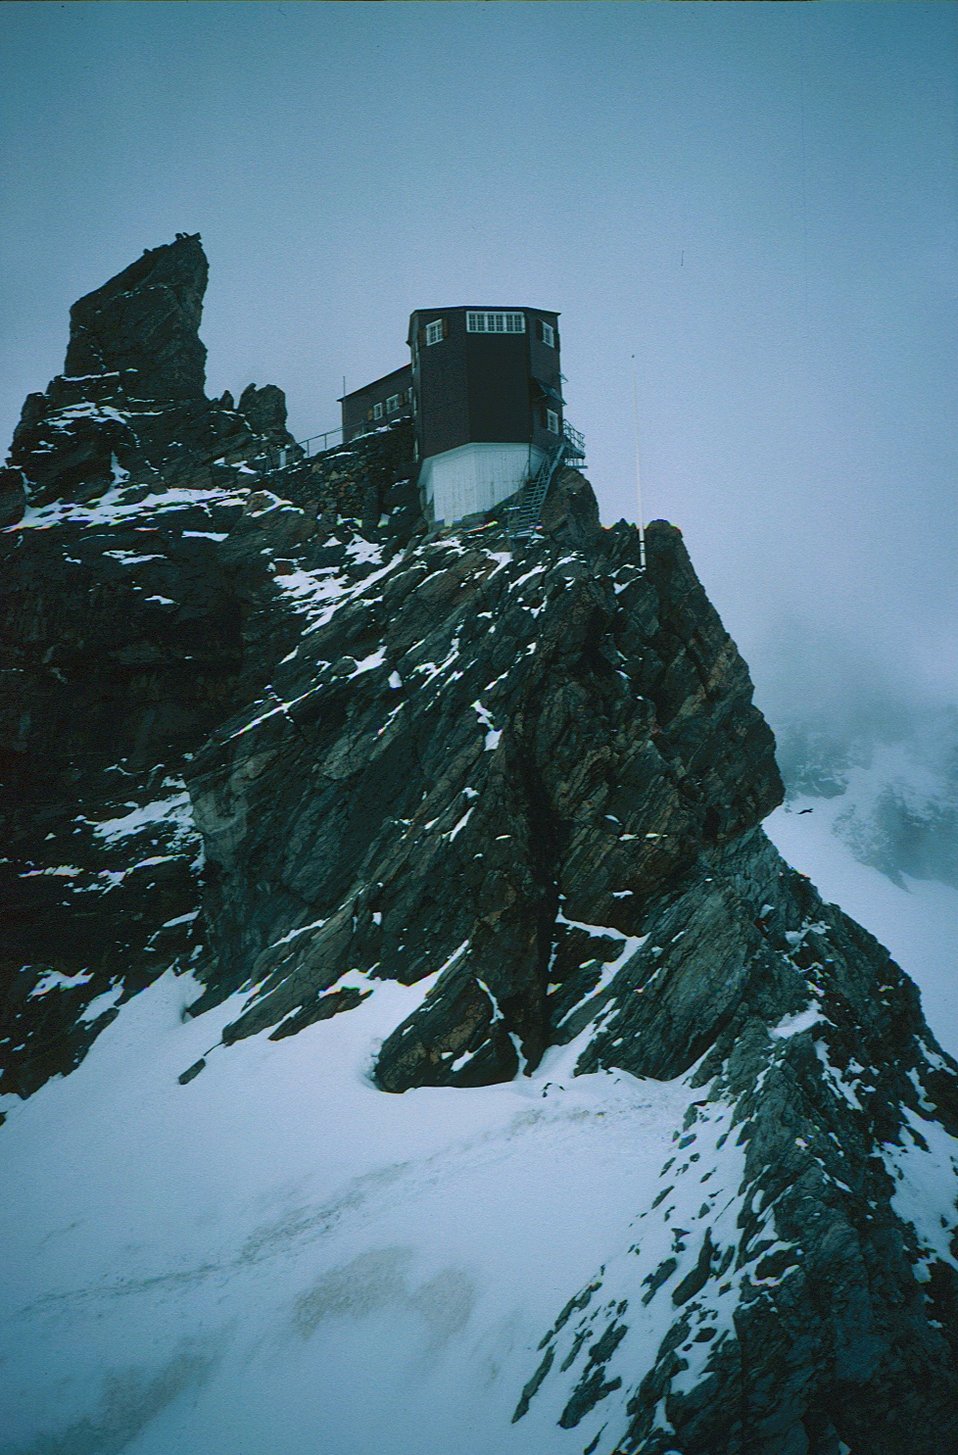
Cabane de Bertol (Bertol Hut) on the Haute Route in Switzerland.